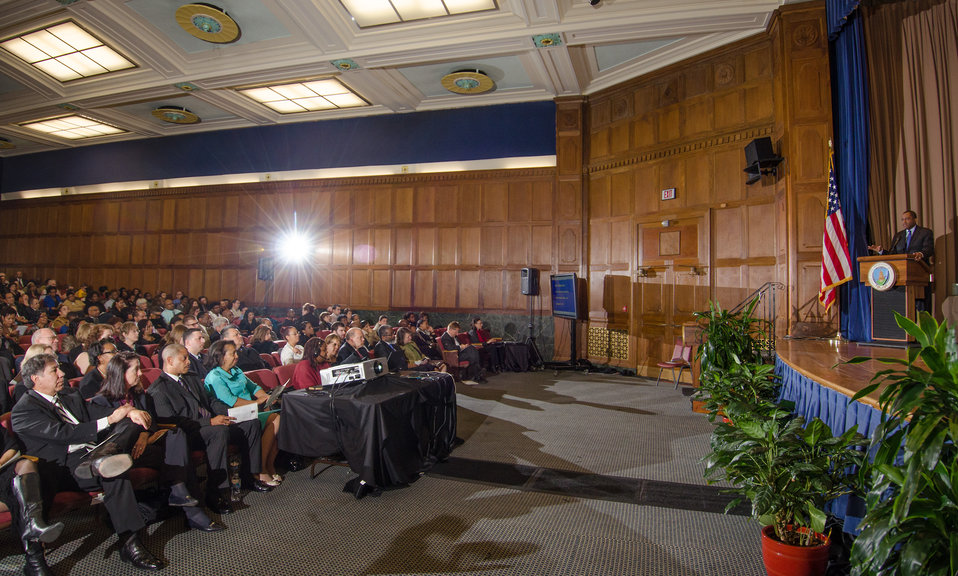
The audience listen to Agriculture Assistant Secretary Civil Rights Dr. Joe Leonard speak during the Dr. Martin Luther King, Jr. National Service Day Drum Major for Service Award ceremony, in Washington, D.C., on Tuesday, Jan. 15, 2013.